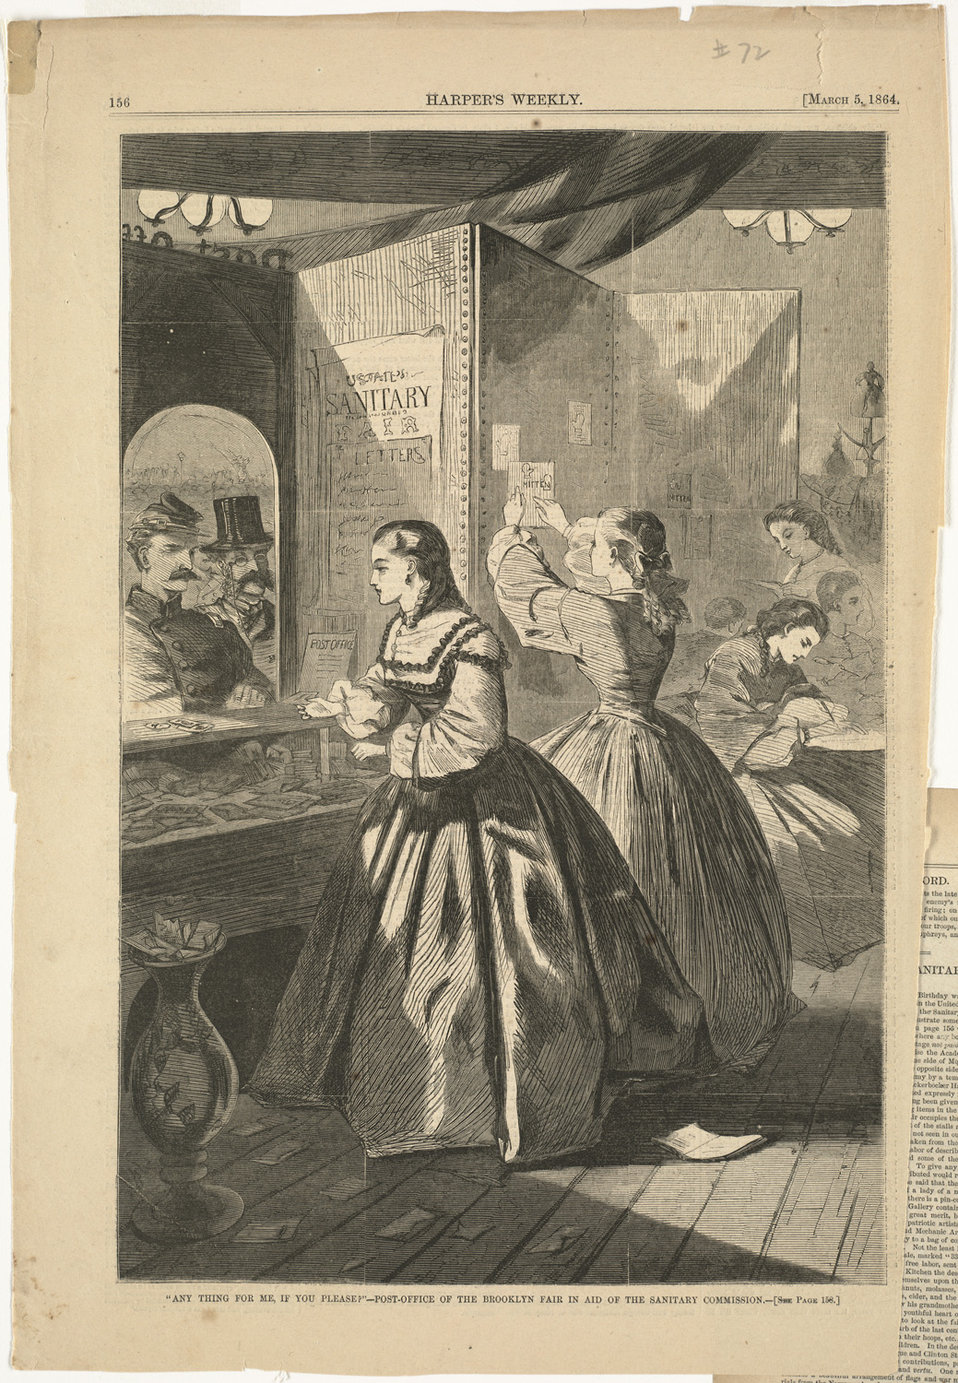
File name: 10 09 000072 Title: 'Any thing for me, if you please?' -- Post-office of the Brooklyn Fair in aid of the Sanitary Commission Creator/Contributor: Homer, Winslow, 1836-1910 (artist) Date issued: 1864-03-05 Physical description: 1 print : wood engraving Genre: Wood engravings; Periodical illustrations Notes: Published in: Harper's Weekly, Volume VIII, 5 March 1864, p. 156.; Signature engraved: Homer. Collection: Winslow Homer Collection Location: Boston Public Library, Print Department Rights: No known restrictions
Flickr data on 2011-08-11: Camera: Sinar AG Sinarback 54 FW, Sinar m Tags: Winslow Homer User: Boston Public Library BPL